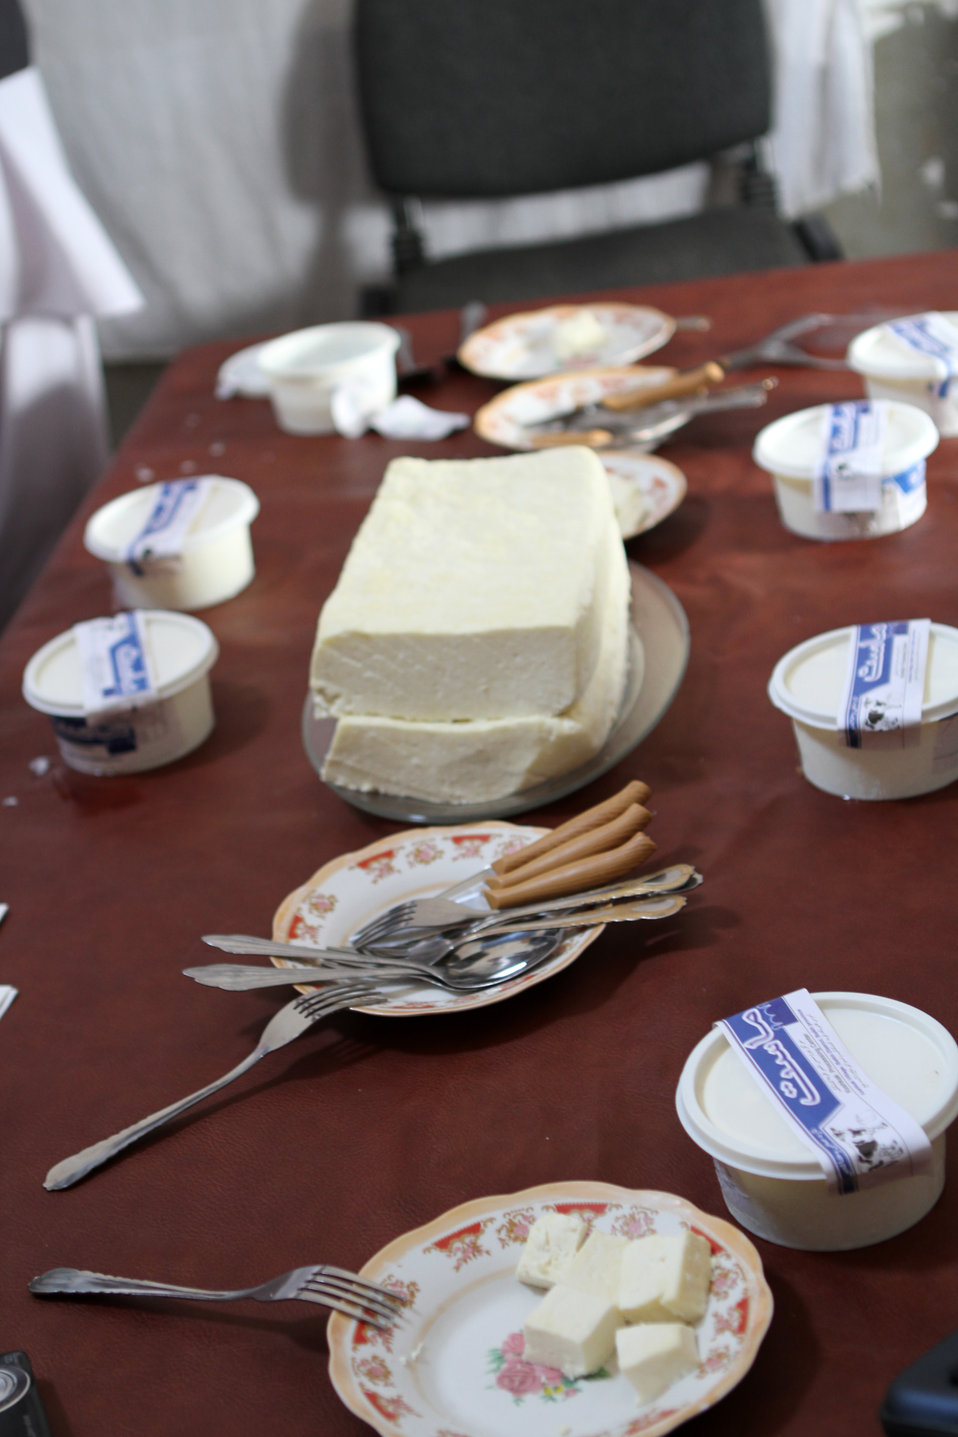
USAID funded Milk Processing Center